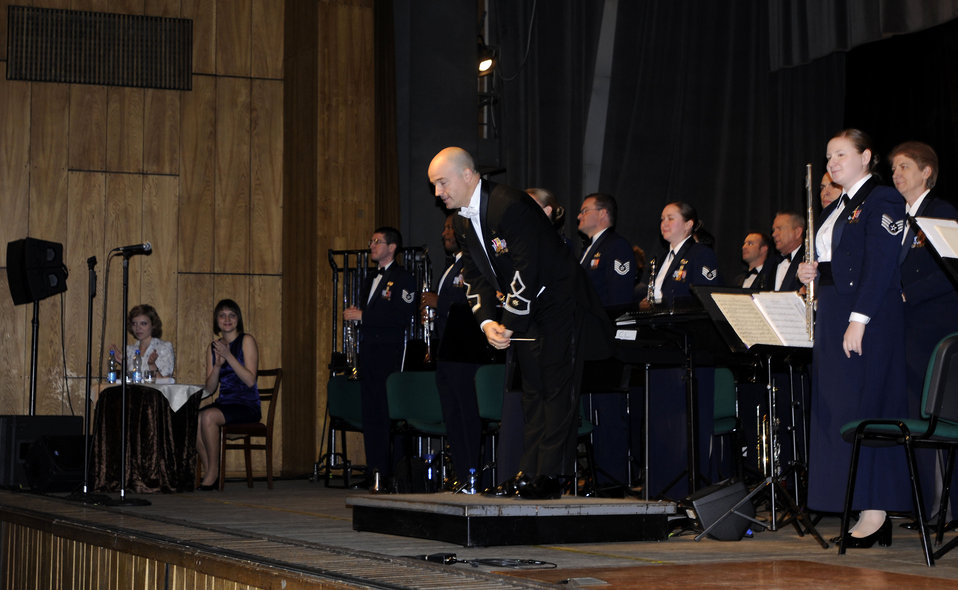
USAFE Band tours Poland

Maj. Matt Henry takes a bow along with the concert band Oct. 24, 2009, during their performance at the Kutno Cultural Center in Kutno, Poland. Four hundred people from the area attended the concert. Major Henry is the U.S. Air Forces in Europe Band's commander and musical director.